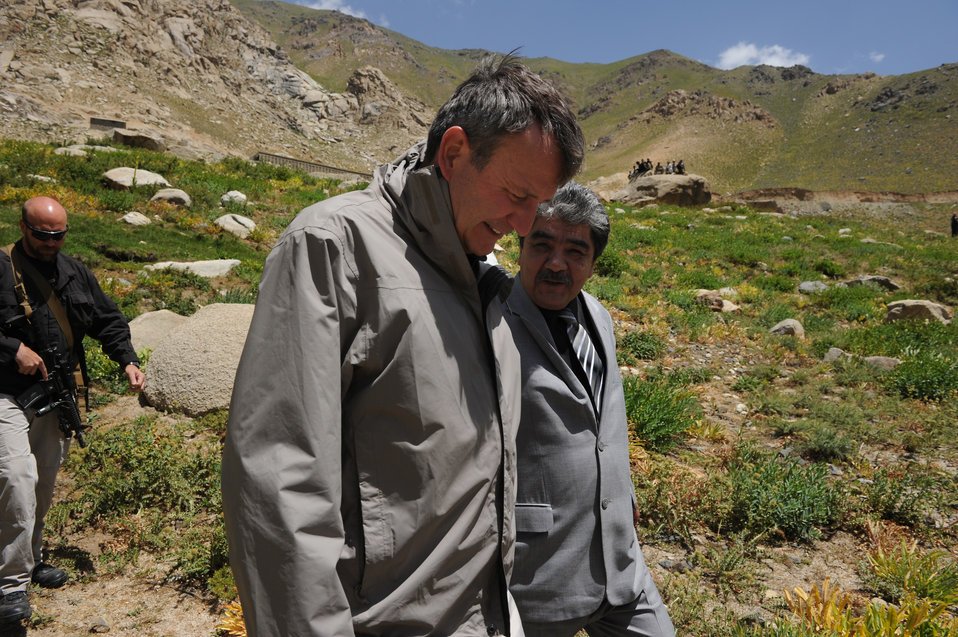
U.S. Ambassador Karl W. Eikenberry and Minister of Public Works Abdul Qudos Niman Hamidi arrive near the South end of the Salang Tunnel to mark the beginning of renovations of the tunnel at the border of Parwan and Baghlan Provinces, Afghanistan, on Wednesday, June 15, 2011. (S.K.Vemmer/Department of State)